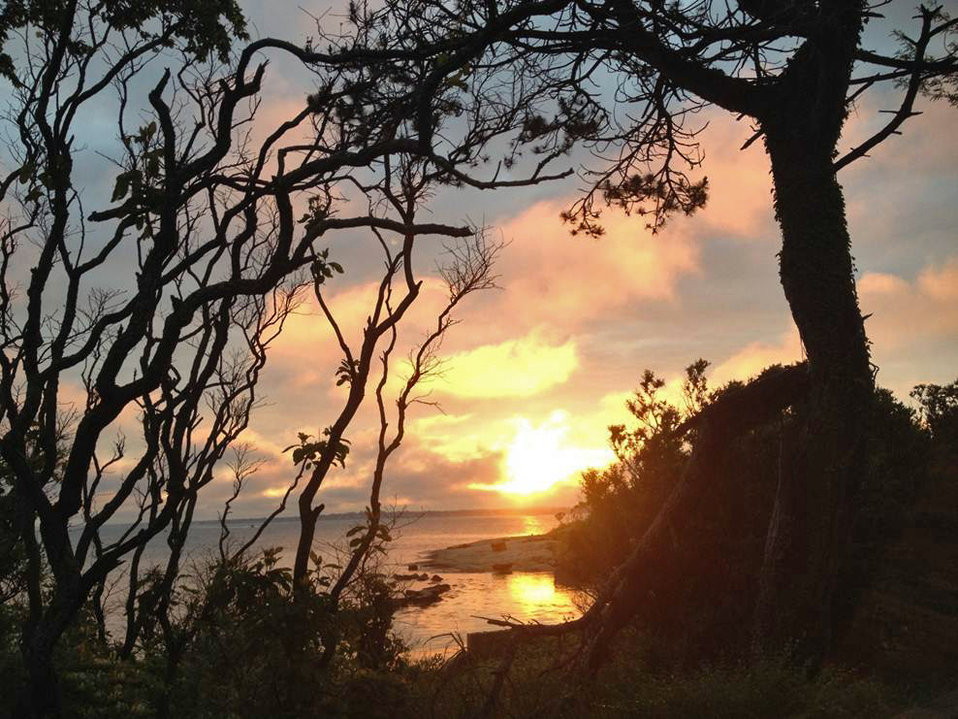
Sunset at Outer Island

Stewart B. McKinney National Wildlife Refuge, CT.